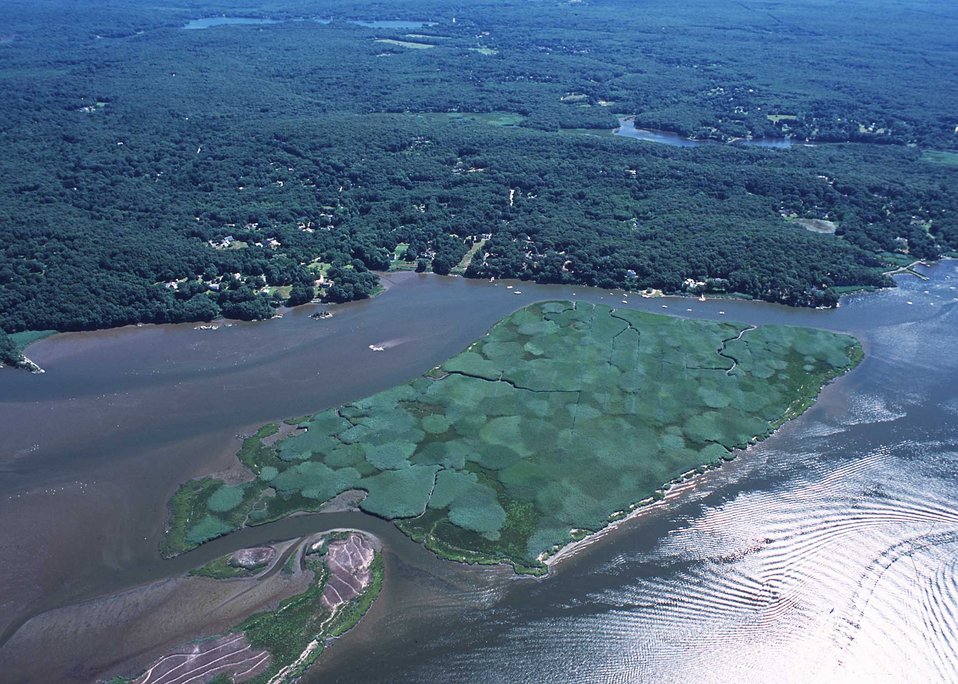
Extensive infestation (foreground) of common reed (Phragmites), an invasive plant within a Connecticut River tideland habitat.